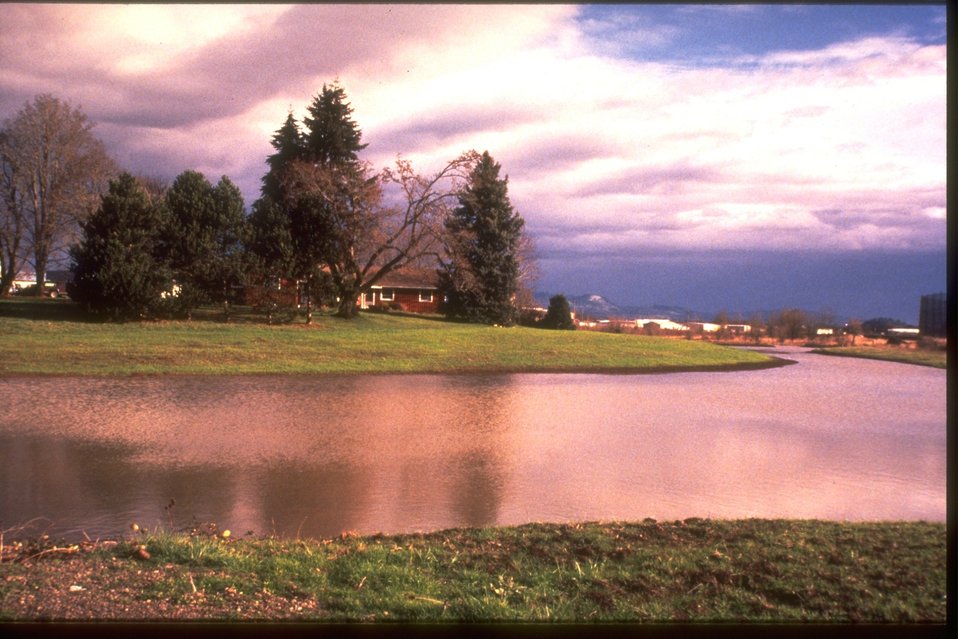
Scenic view of the West Eugene Wetlands Project Office.